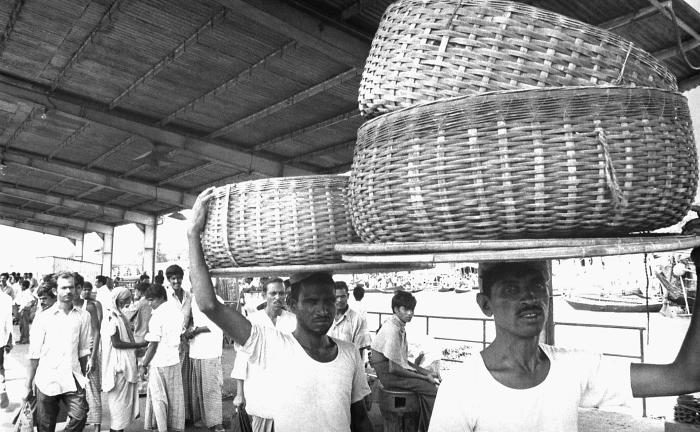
These men were carrying large woven containers on their heads, and were about to load their contents unto a launch, which had pulled up to the ghat at the river's edge. This photograph provided by Dr. Stan Foster, and captured by Pierre Claquin, M.D., B.A.C., who at the time was a member of the World Health Organization's Smallpox Eradication Program. It was part of a series photographed by former E.I.S. officer, Stanley O. Foster M.D., M.P.H., and was one of a series entitled 'The Story of One Smallpox Jeep', which depicted the travails faced by the jeep, and its occupants of public health practitioners, as they road through the Bangladesh countryside in an attempt to eradicate smallpox from the country.